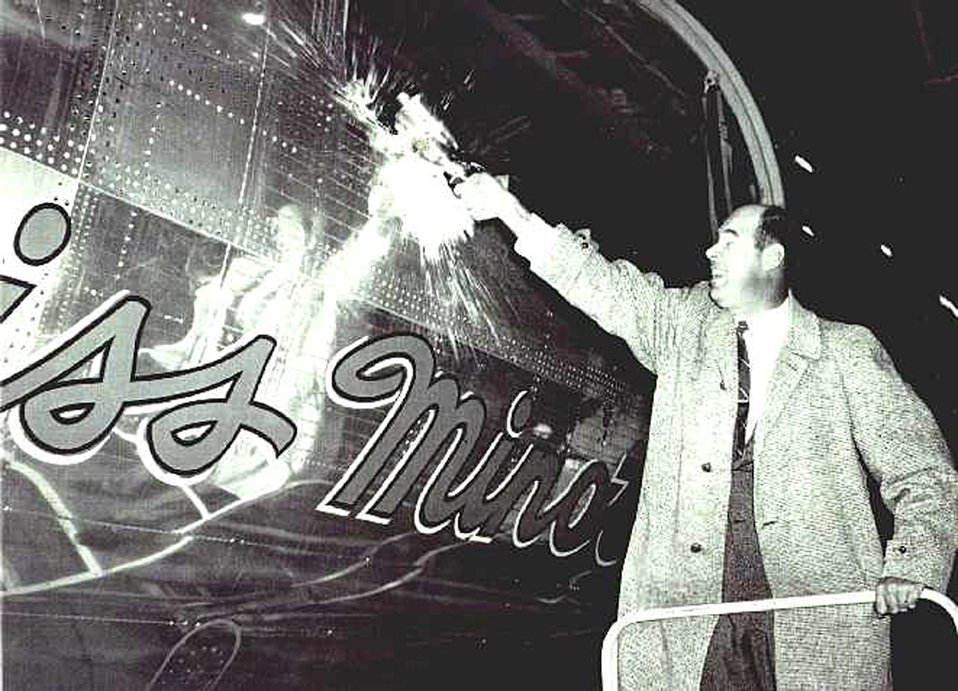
Minot AFB celebrates 50th anniversary

The first KC-135A Stratotanker, dubbed